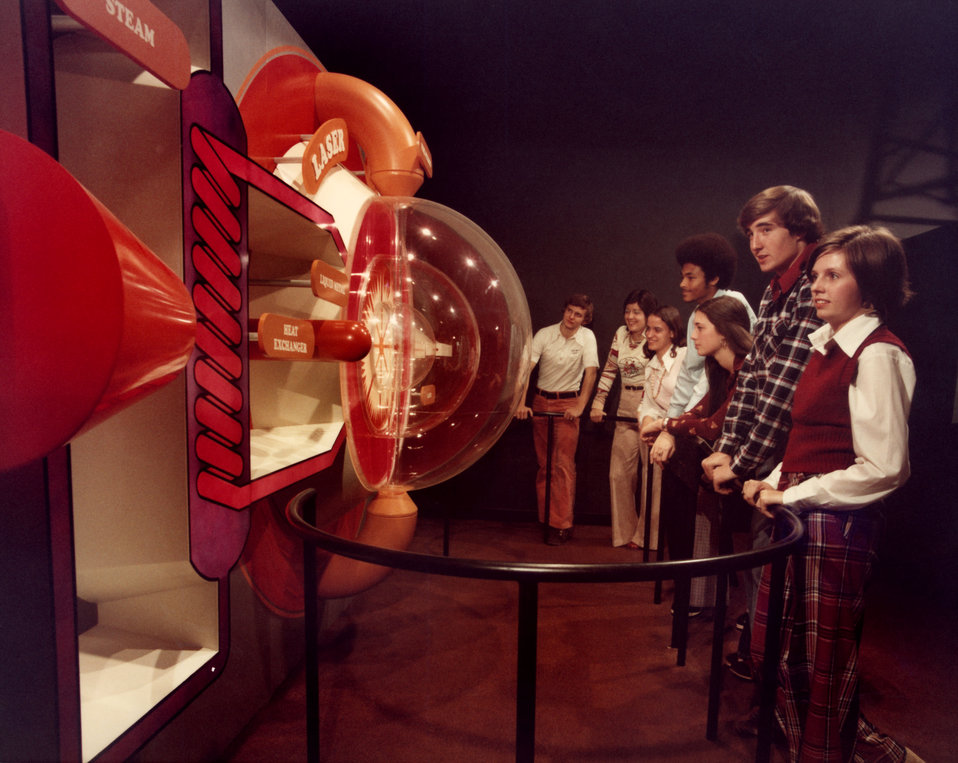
Laser Game American Museum of Science and Energy Oak Ridge

75-42-4 DOE photo Frank Hoffman
Laser Game American Museum of Science and Energy Oak Ridge Tennessee Jan. 1975